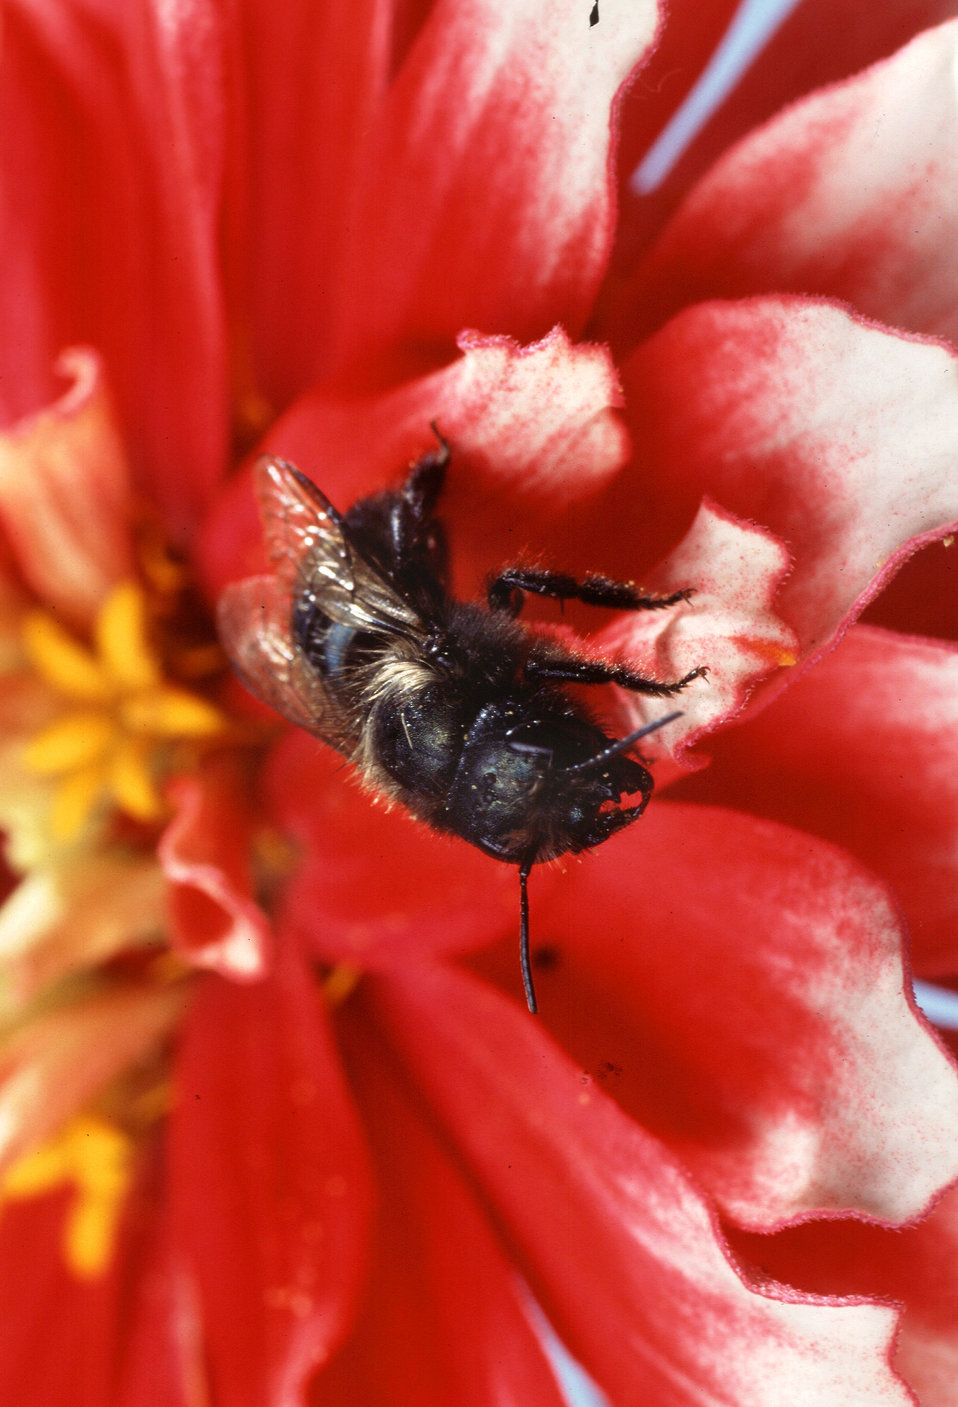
A blue orchard bee pollinates a zinnia.